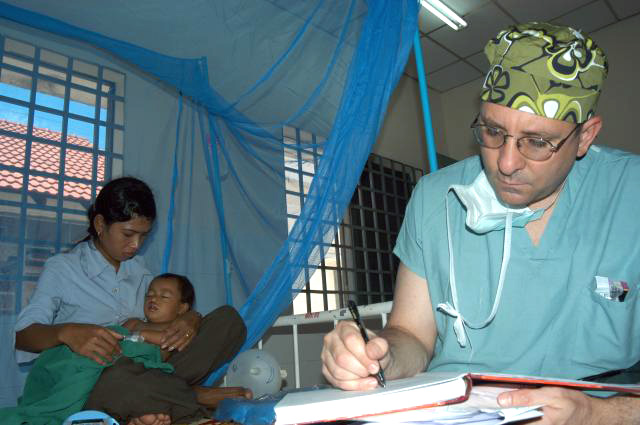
Care in Cambodia

KEP, Cambodia -- Capt. (Dr.) Jason Rosenberg writes some notes in the post-operation recovery unit at a hospital compound here May 18 after performing surgery to fix a cleft lip. Dr. Rosenberg is part of a 20-member blast resuscitation and victim assistance mission team that arrived here for a two-week humanitarian mission. He is a reconstructive plastic surgeon from the Air Force Reserve Personnel Center in Denver.